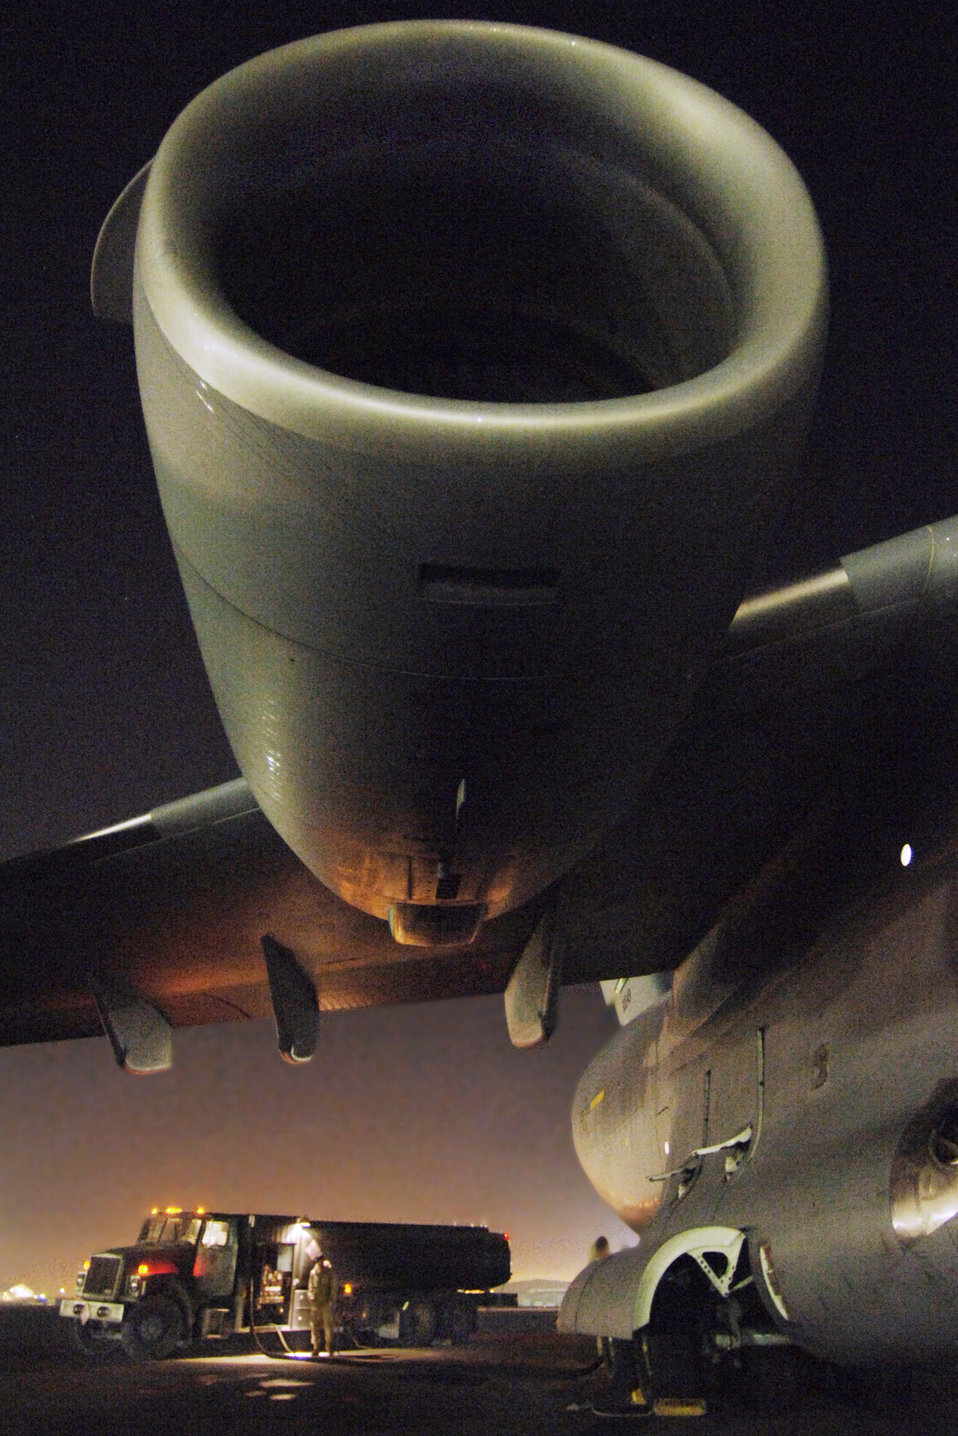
Milestone

Senior Airman Matthew Turner monitors the outgoing fuel pressure on an R11 fuel truck that feeds a C-17 Globemaster III at a forward operating base Dec. 5 in Southwest Asia. During November, Airman Turner pumped 1,132,619 gallons of fuel to 250 aircraft. Airman Turner is deployed from Beale Air Force Base, Calif.